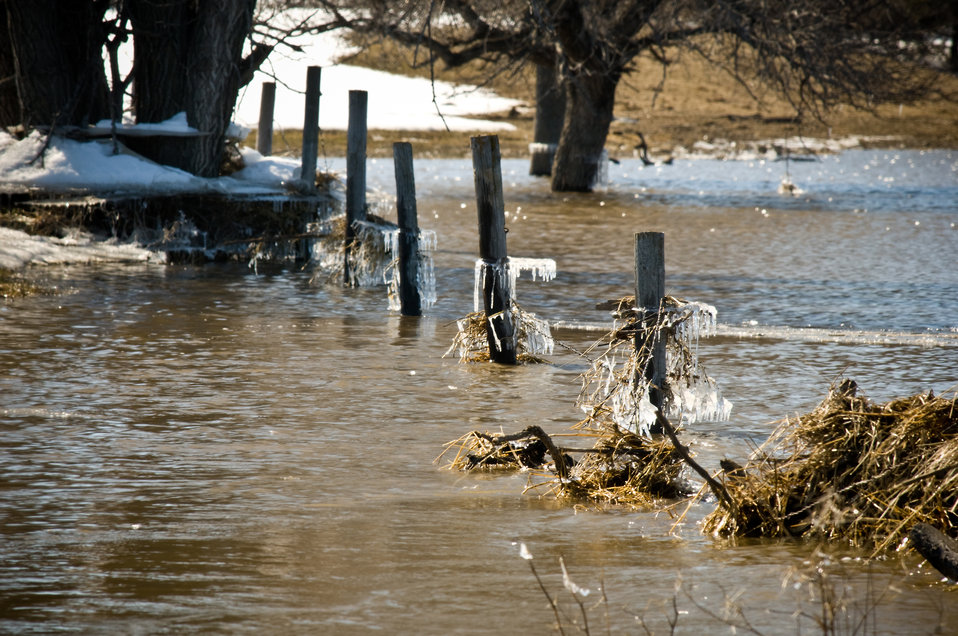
Farmland was under water in North Dakota on April 8, 2009 due to the Red and Missouri Rivers overflowing their banks. North Dakota received abnormally heavy winter snows atop saturated and frozen ground, which was already saturated when it froze at the beginning of winter, melting snow which could not be absorbed by the frozen ground, additional precipitation from a rain storm on March 22, 2009 and a late snowstorm at the end of the month added to the existing snowpack.